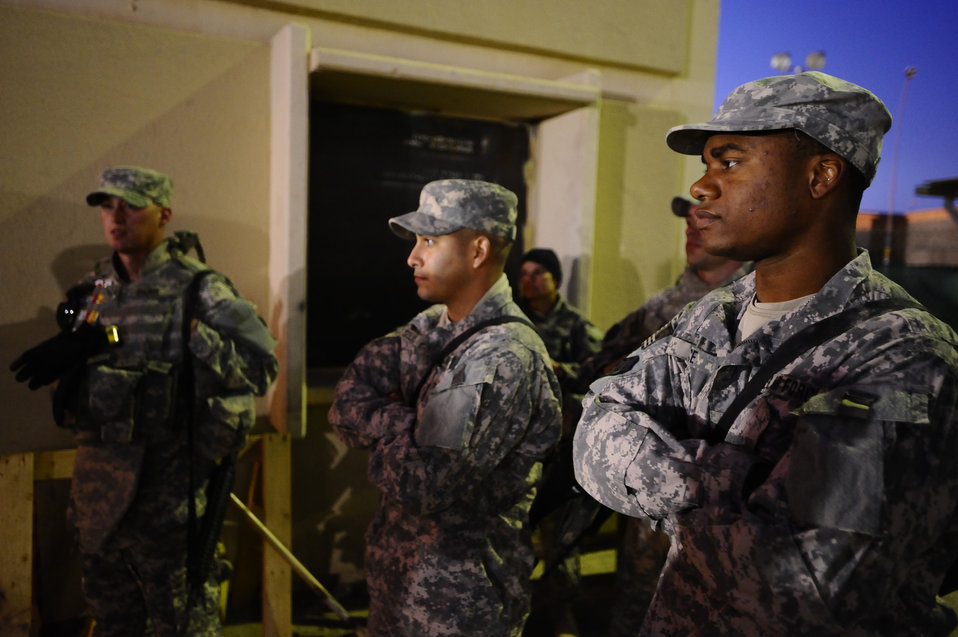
Air Force engineers answer the call from Soldiers in Iraq

Staff Sgt. Kevin Tyce (right) listens to a briefing before an outside-the-wire mission Dec. 11 at Joint Base Balad, Iraq. Sergeant Tyce and other Airmen from the 732nd Expeditionary Civil Engineer Squadron Det. 6 undertake construction projects for the Army. Sergeant Tyce, a 732nd ECES Det. 6 electrical systems specialist and native of Oklahoma City, is deployed from Yokota Air Base, Japan.